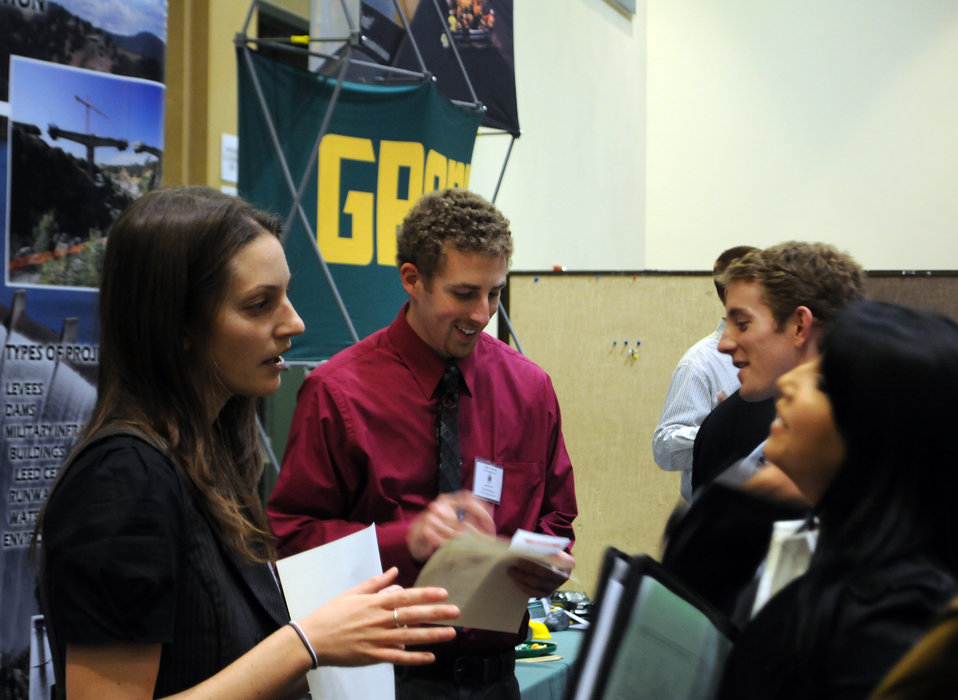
Corps talks jobs to engineering students

SACRAMENTO, Calif. (March 11, 2011) -- U.S. Army Corps of Engineers Sacramento District environmental engineers Heather Jackson (left) and Daniel Holburg (second from left) take resumes and talk to students from the California State University-Sacramento's College of Engineering and Computer Science (ECS) during the ECS annual career fair here March 11. The fair featured nearly 60 public and private companies in construction and engineering, and attracted more than 1,500 students.